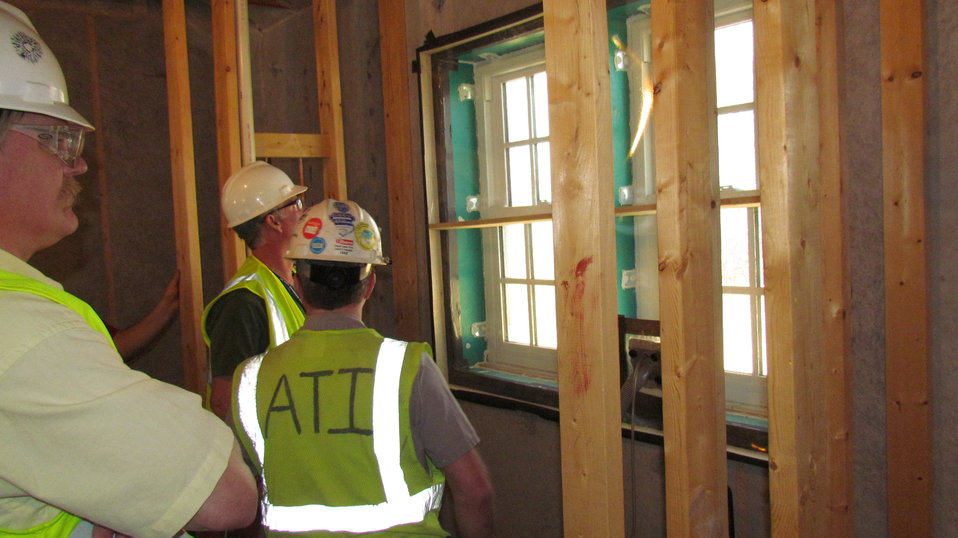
Personnel witnessing air infiltration and water resistance testing of window unit in kitchen area of NZERTF.